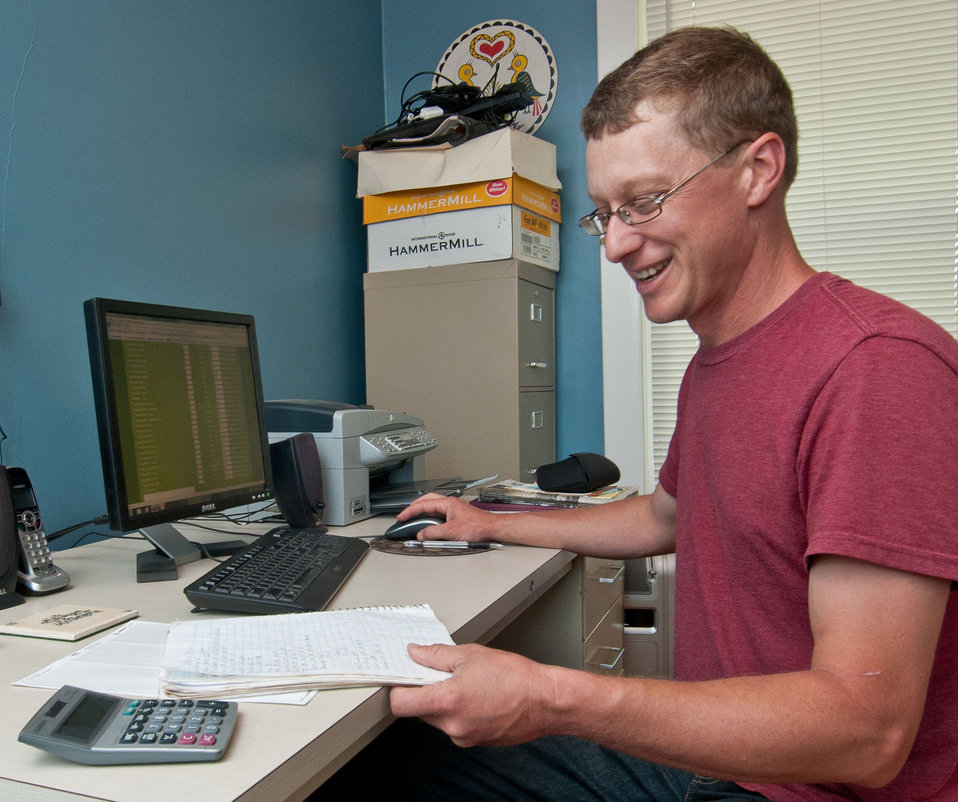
Bruce Johnson, owner of the Dragonfly Farm in Beaverdam, VA, updates an online inventory at on Friday, May 6, 2011, just as dozens of other suppliers associated with Lulus Local Food website also do every Friday. Over the weekend the inventory becomes visible for sale to members of Lulus Local Food website and distributed with the help of other suppliers participating with Fall Line Farms food hub. Together, they offer a wide variety of household food staples and specialty items. Members pick their customized orders from an ever changing seasonal inventory of fruits, vegetables, meats, soaps, eggs, cheeses, flowers, honey, pastas, sauces, syrups, baked goods, mushrooms, flour and grains from the Richmond area.